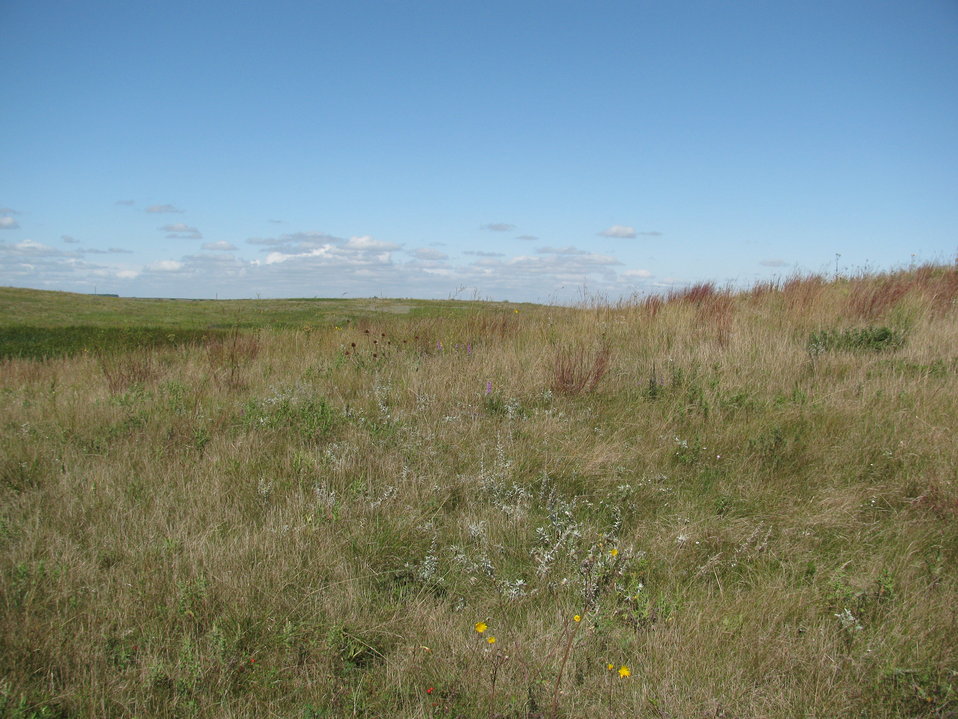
Prairie

This prairie photo was taken at the Cornell WPA.